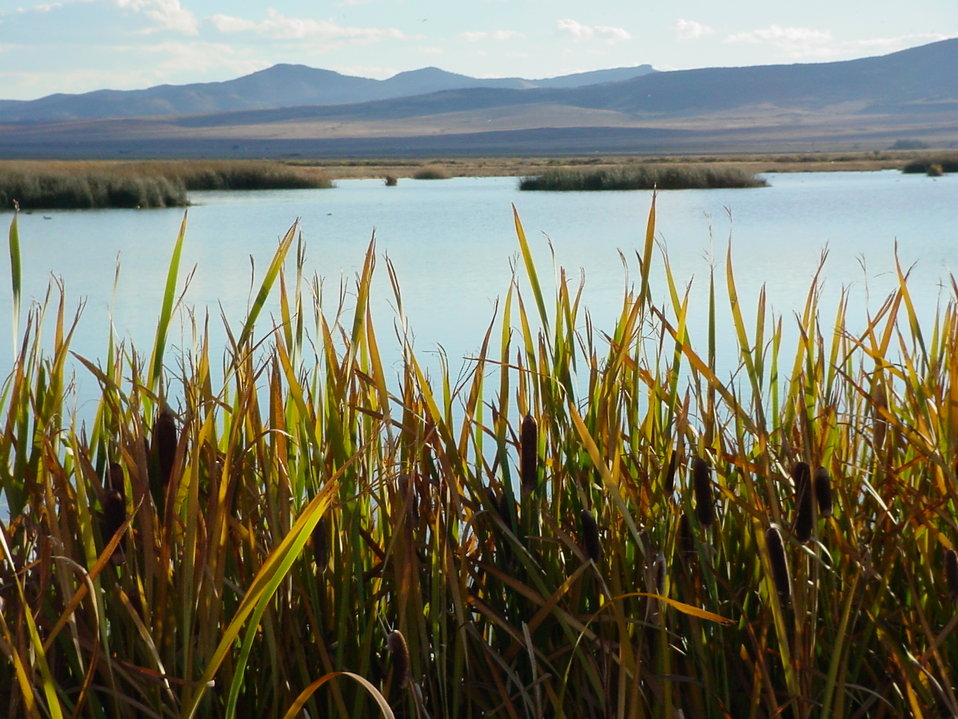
Wetlands at Monte Vista National Wildlife Refuge

Spring wetland scene at Monte Vista National Wildlife Refuge in Colorado.